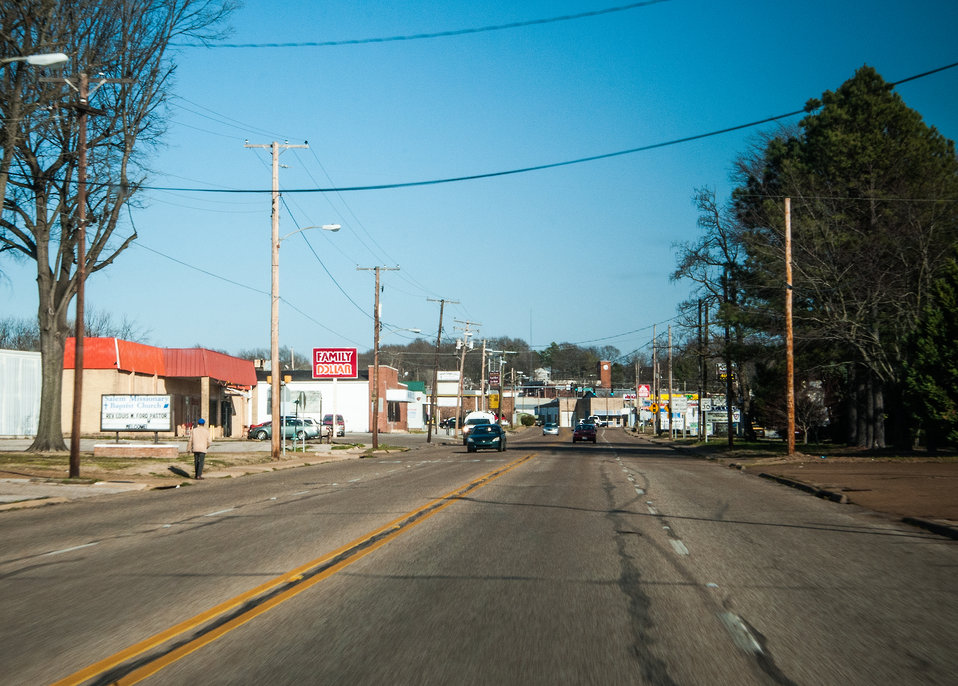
Traffic flows through downtown Forest City, AR on Mar. 5, 2013. The East Arkansas Enterprise Community, Inc. in Forrest City, AR is one of 42 community-based organizations located in high poverty areas in the U.S. to benefit from the Arkansas Delta Seeds of Change (ADSOC) Initiative. The U.S. Department of Agriculture (USDA) in partnership with Heifer International (an International organization whose mission is to work with communities to end hunger and poverty and care for the Earth) and various for-profit and non-profit organizations have put in motion the “Seeds of Change Implementation Plan” to use sustainable agriculture to build food systems in the Arkansas Delta. The program has evolved into the ADSOC Initiative.